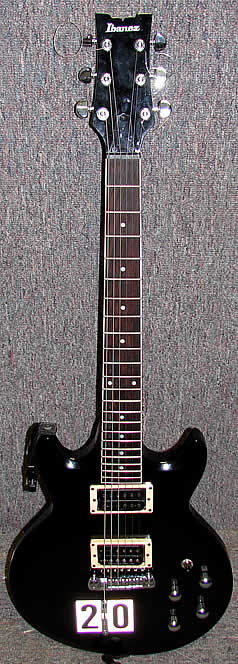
An Ibanez AX125 with Drop-D Downshifter.